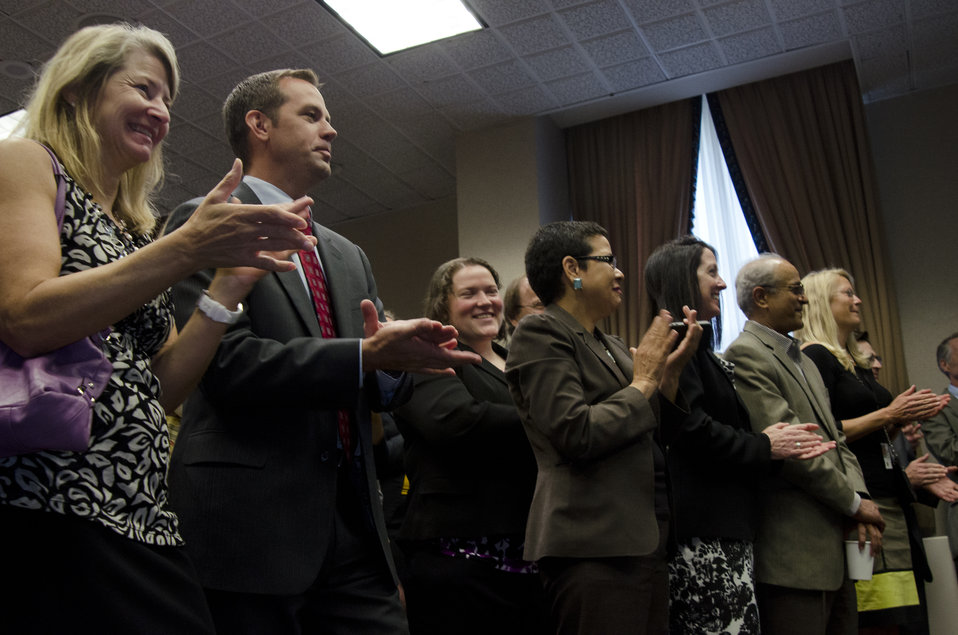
Members of the audience applaud after Agriculture Secretary Tom Vilsack swore in Krysta Harden as the new Deputy Secretary of Agriculture and Robert Bonnie as the new Under Secretary for Natural Resources and Environment at the U.S. Department of Agriculture in Washington, D.C. on Monday, Aug. 12, 2013.